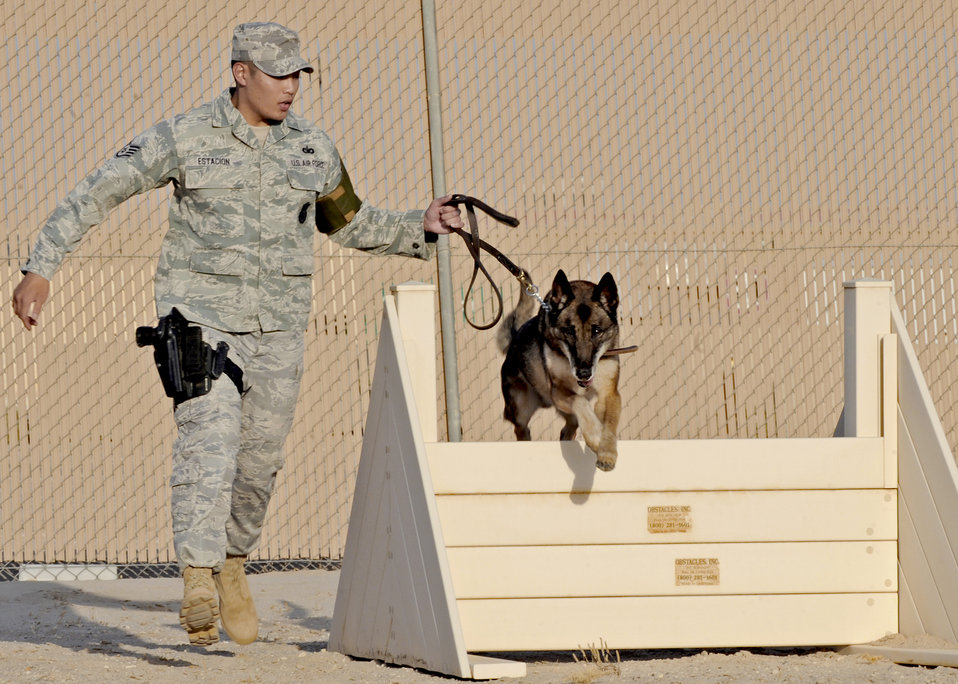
386 ESFS MWD

Staff Sgt. Lino Estacion takes his military working dog, Gabe, through an obstacle course as part of a routine training and exercise program July 27, 2010, in Southwest Asia. Sergeant Estacion is a dog handler with the 386th Expeditionary Security Forces Squadron.